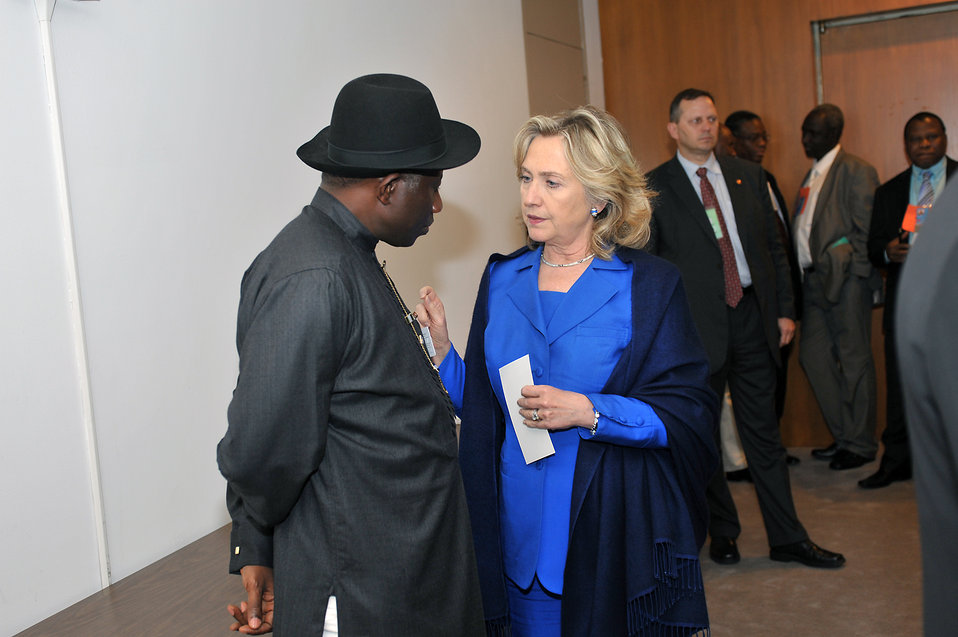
Secretary Clinton Speaks With Nigerian President Goodluck Jonathan

U.S. Secretary of State Hillary Rodham Clinton speaks with Nigerian President Goodluck Jonathan at the UN in New York, New York, on September 23, 2010.